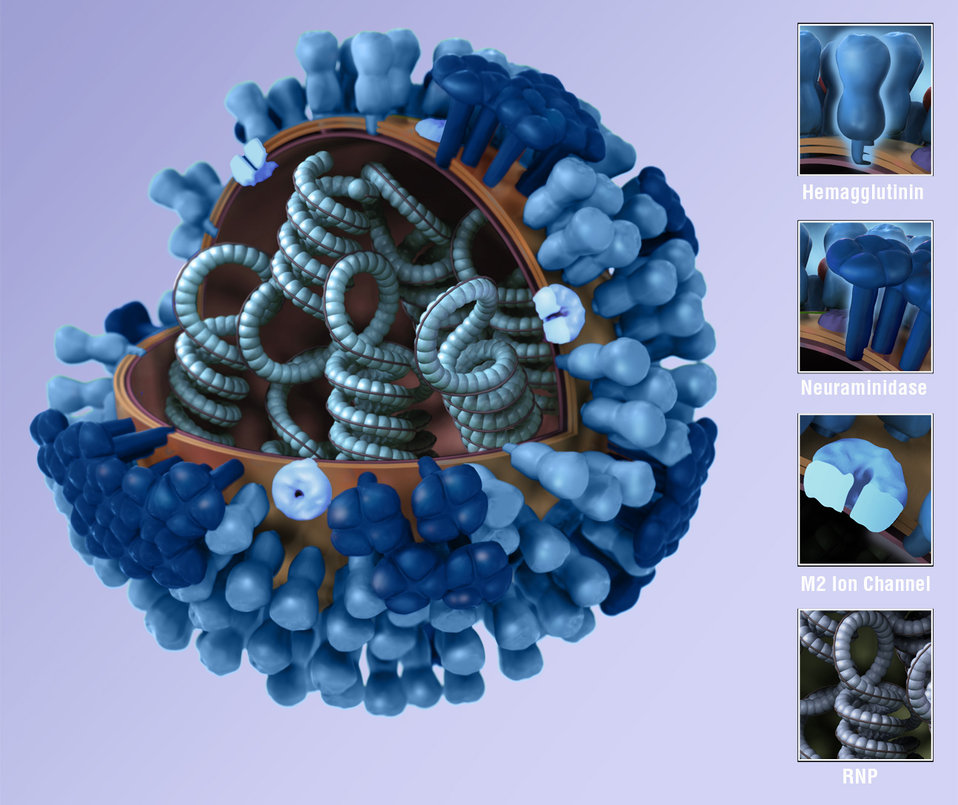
On a lavender background, this illustration provides a 3D graphical representation of a generic influenza virion's ultrastructure, and is not specific to a seasonal, avian or 2009 H1N1 virus. A portion of the virion's outer protein coat has been cut away, which reveals the virus' contents, and a key has been included, which identifies these components. See PHIL 11880 for an uncut view of the virion's exterior.